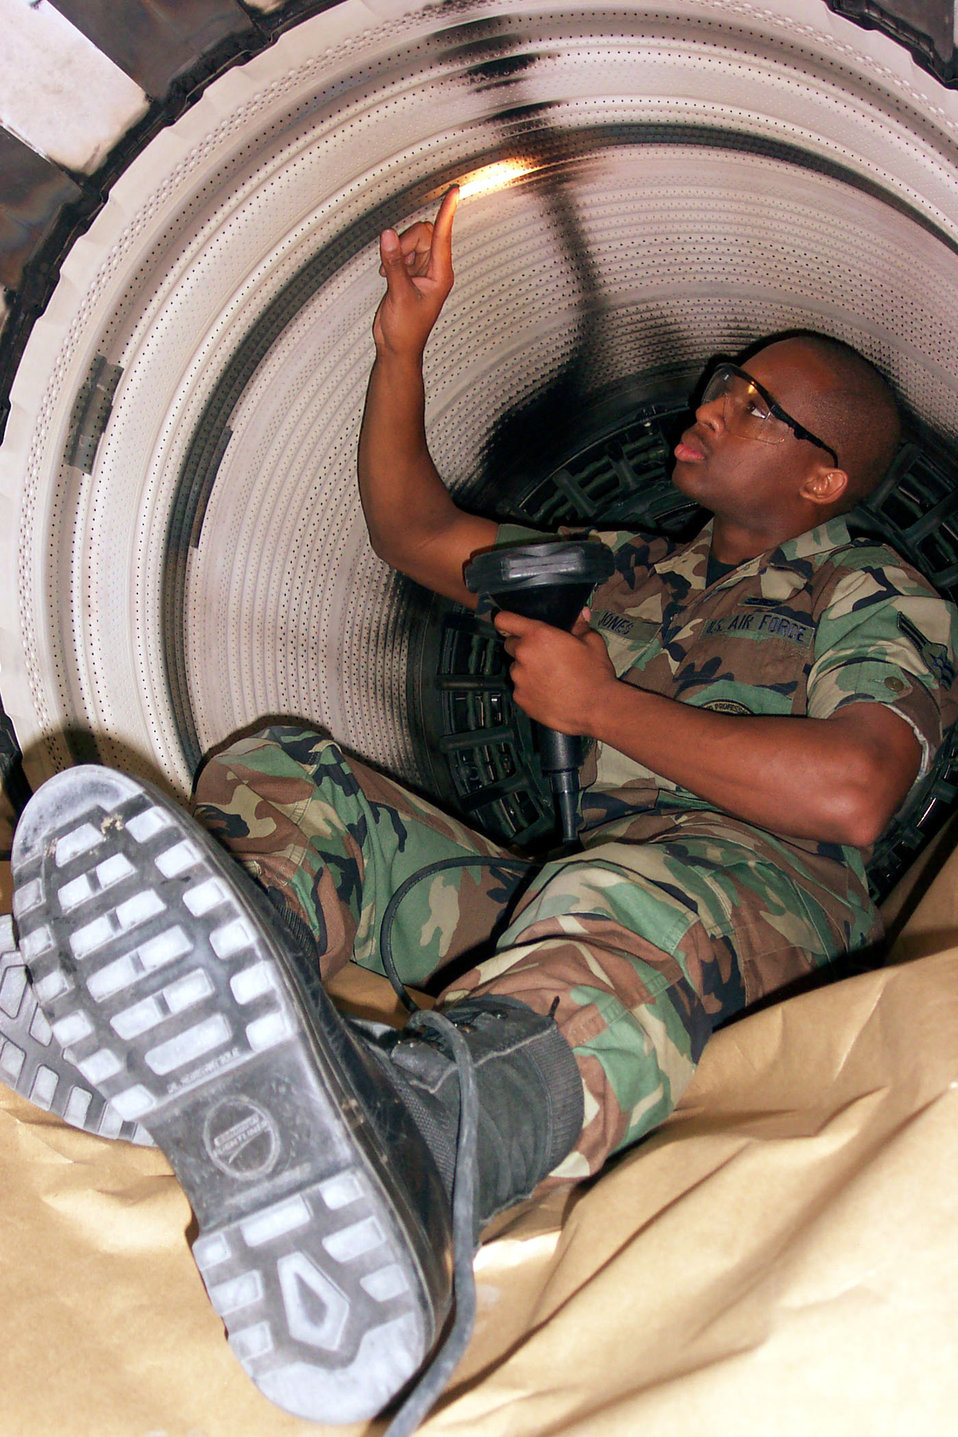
This little light of mine

EDWARDS AIR FORCE BASE, Calif. -- Airman 1st Class Anthony Jones inspects inside a jet engine. He is assigned to the 412th Component Maintenance Squadron's propulsion flight engine shop here.